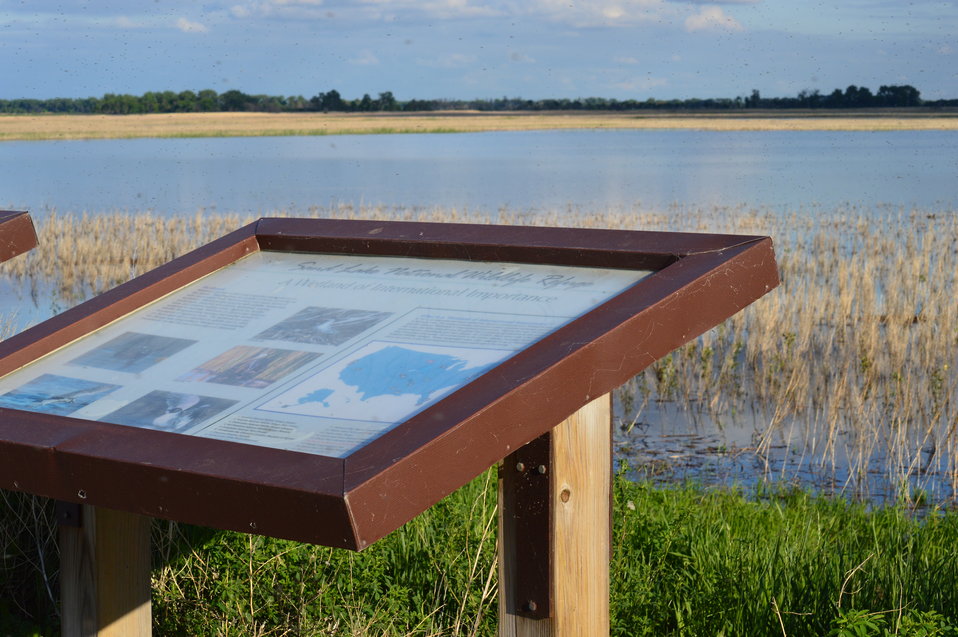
Interpretation signs at Sand Lake NWR

Scenery and wildlife at Sand Lake National Wildlife Refuge in South Dakota.